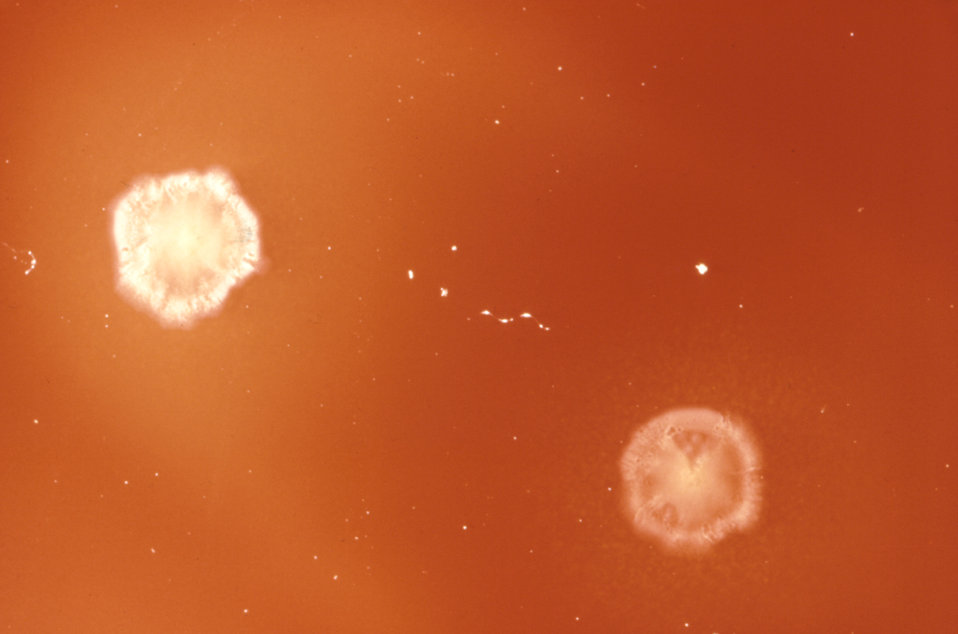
These are Clostridium chauvoei colonies; Magnification 2X.